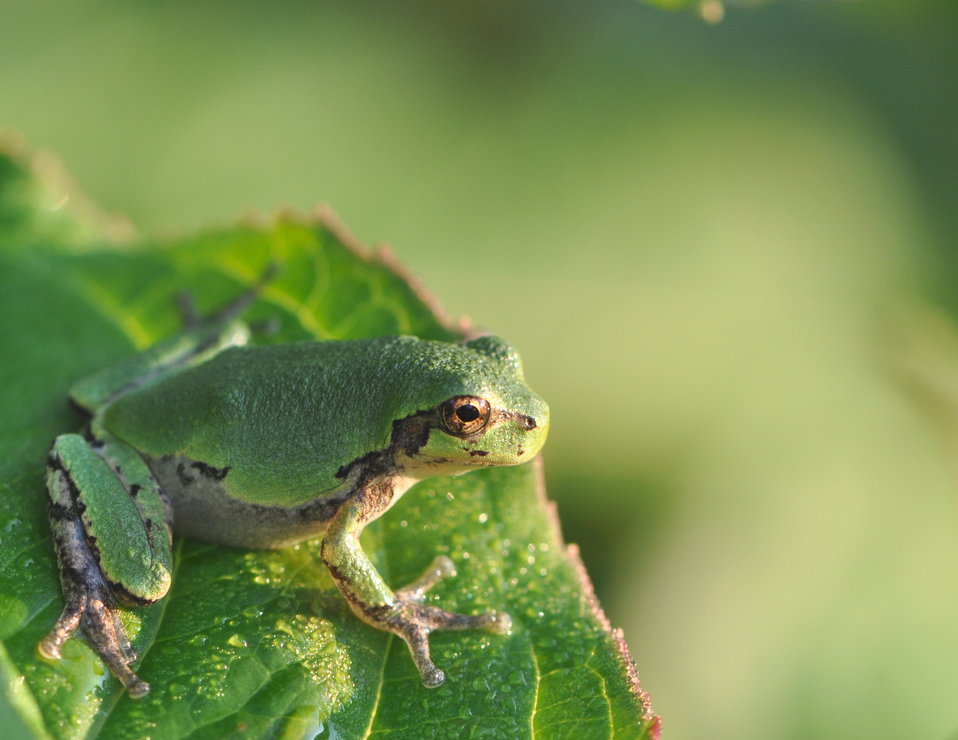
Eastern Gray Treefrog at Horicon National Wildlife Refuge